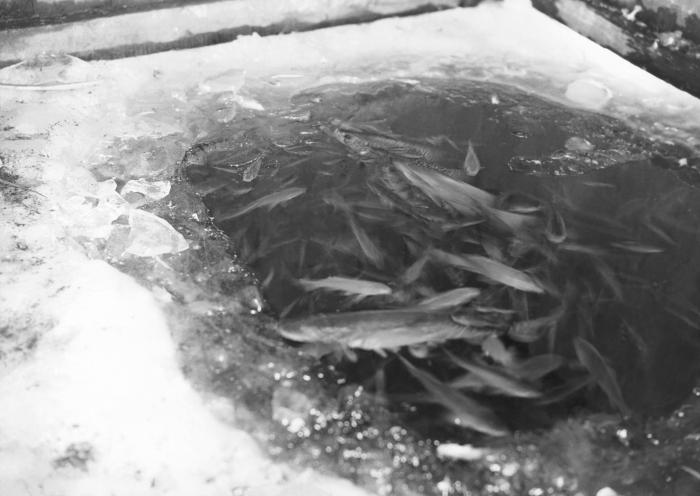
This historic photograph depicted a gathering of fish coming up for oxygen inside a fish house constructed atop a frozen lake. The picture was taken at Lake Merion near Brownton, Minnesota on February 3, 1936, and was offered as evidence that pollution of the water has occurred.